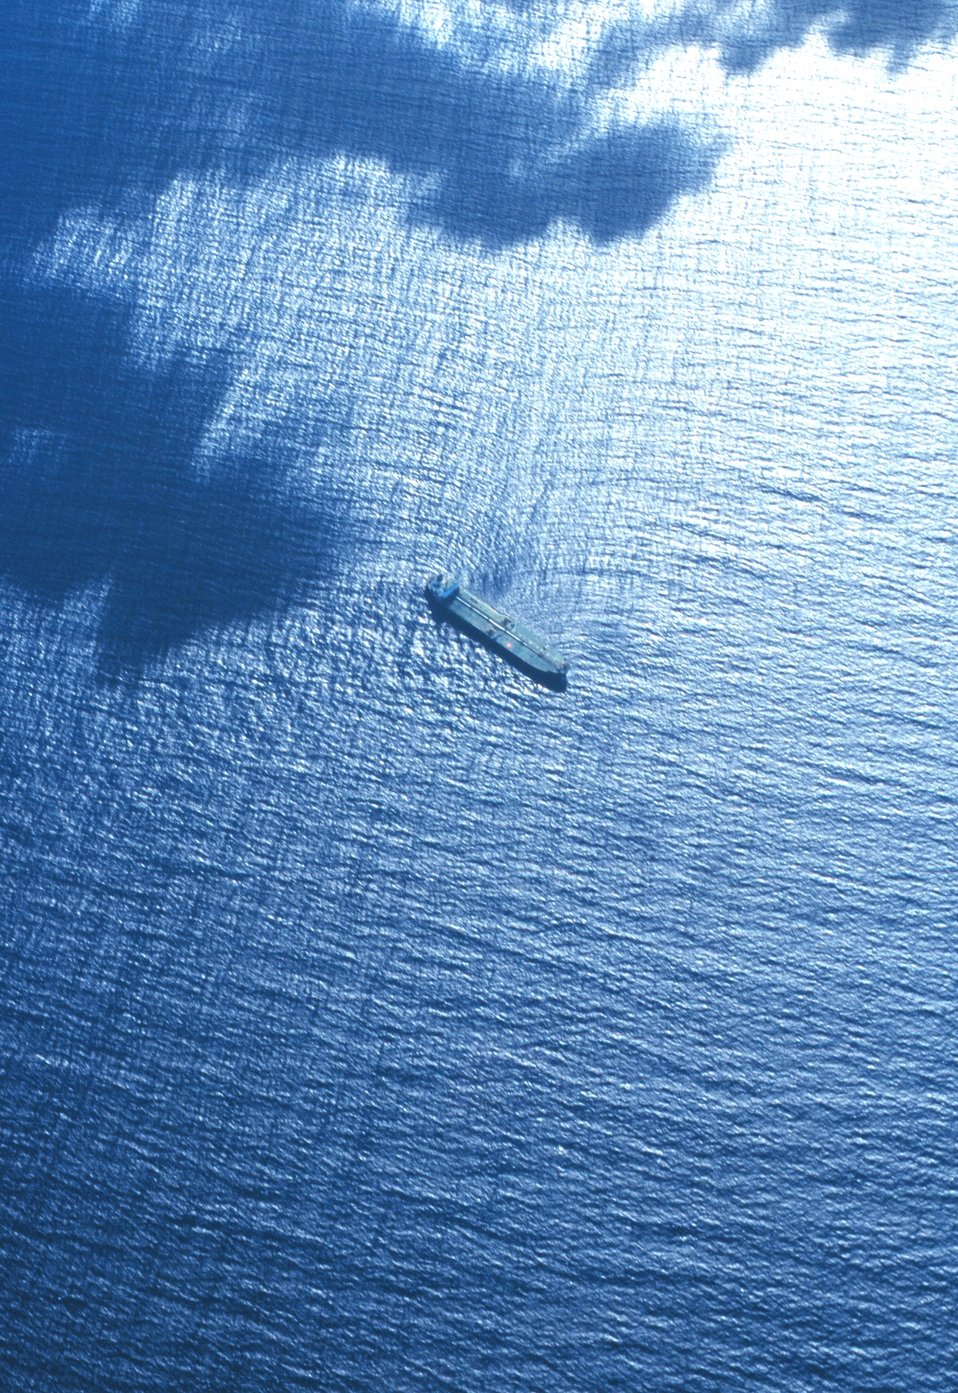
Strange wave refraction pattern apparent in aerial photograph as swells encounter large merchant vessel